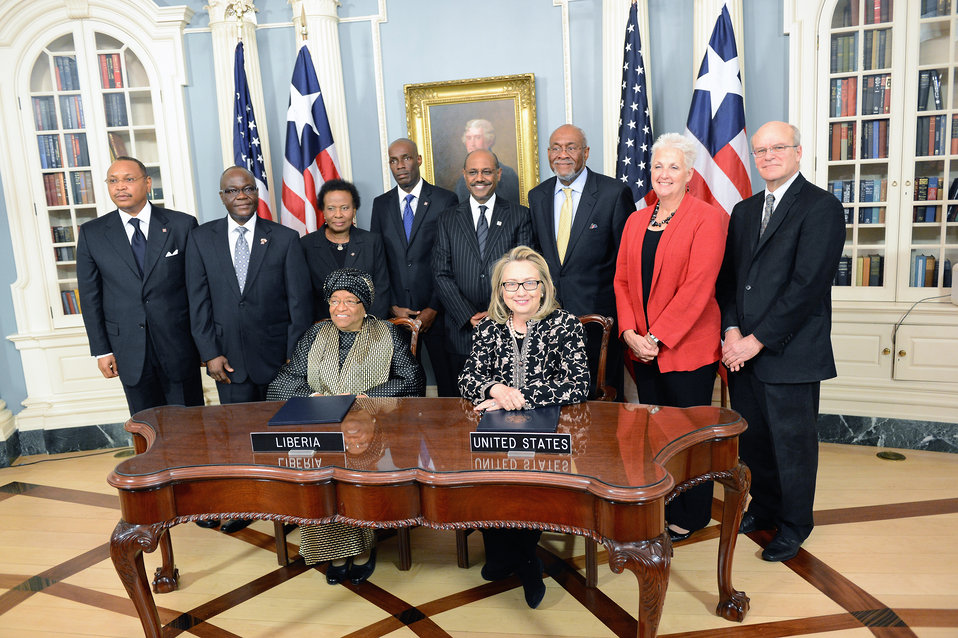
Secretary Clinton Holds a Signing Ceremony With Liberian President Sirleaf

U.S. Secretary of State Hillary Rodham Clinton holds a U.S.-Liberia Partnership Dialogue signing ceremony with Liberian President Ellen Johnson Sirleaf at the U.S. Department of State in Washington, D.C., January 15, 2013.